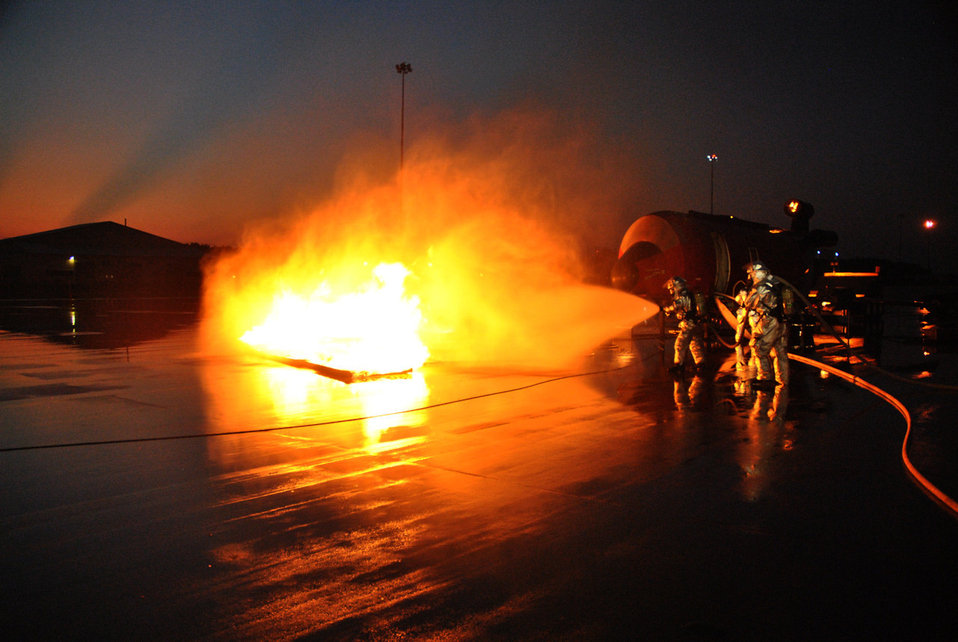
All ablaze

Air National Guard firefighters work to extinguish a fire during a training exercise Sept. 2, 2011, at Selfridge Air National Guard Base, Mich. The firefighters worked on a variety of scenarios involving a fire in and around an aircraft simulator.